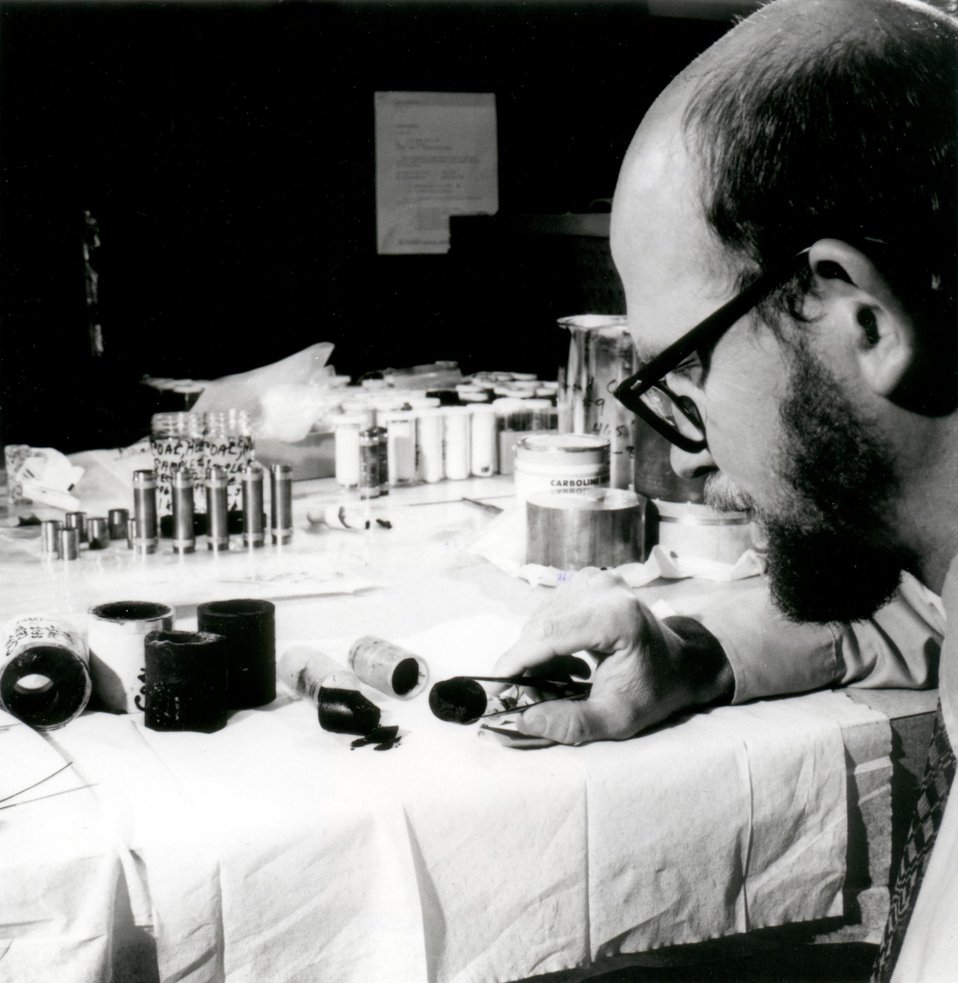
IN SITU COAL GASIFICATION...Explosion of a new concept for obtaining huge supplies of usable natural gas through the gasification, in place (in situ) underground, of deep-lying coal deposits in the Rocky Mountain States has been undertaken by the U.S. Atomic Energy Commission's Lawrence Livermore Laboratory. Circa 1974.